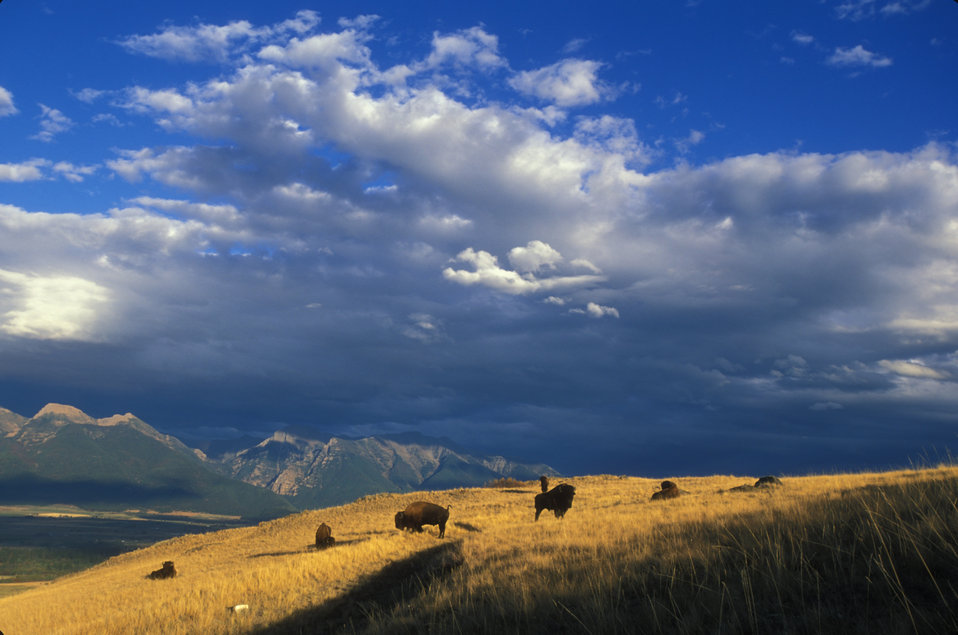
bison back from the brink

National Bison Range, MT
October 2003
Photo: Ryan Hagerty, USFWS
Bison had been hunted to the verge of extinction when Congress created the National Bison Range in 1908, helping set the stage for the recovery of this iconic American animal.